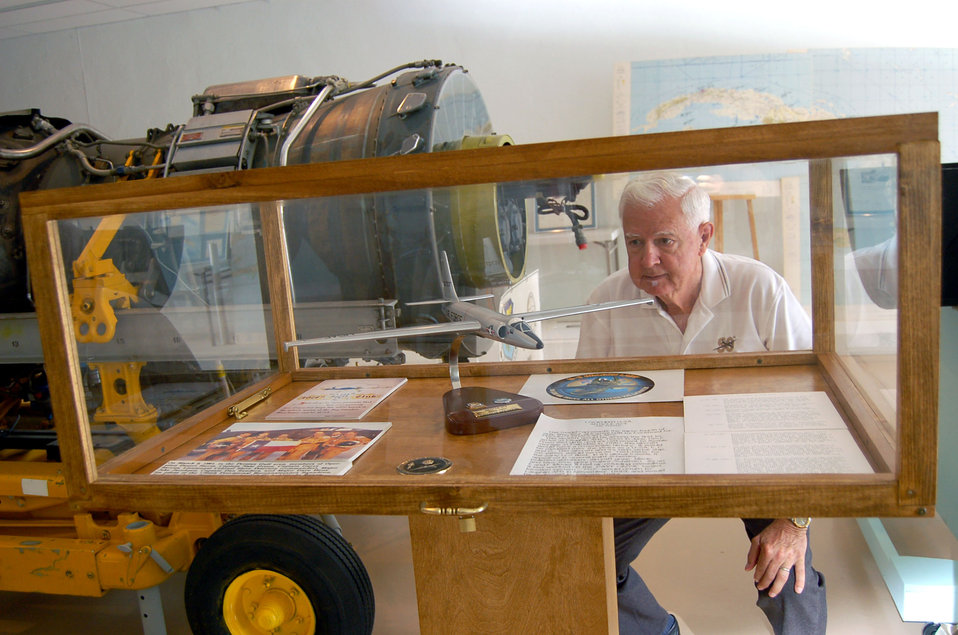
Museum displays Air Force heritage, history

Retired Air Force Col. Victor Milam inspects a U-2 display case at the Laughlin Heritage Foundation Museum in Del Rio, Texas, on Tuesday, June 27. The museum has been open for six months and is run by volunteers. Colonel Milam is treasurer of the Laughlin Heritage Foundation and a retired U-2 pilot.